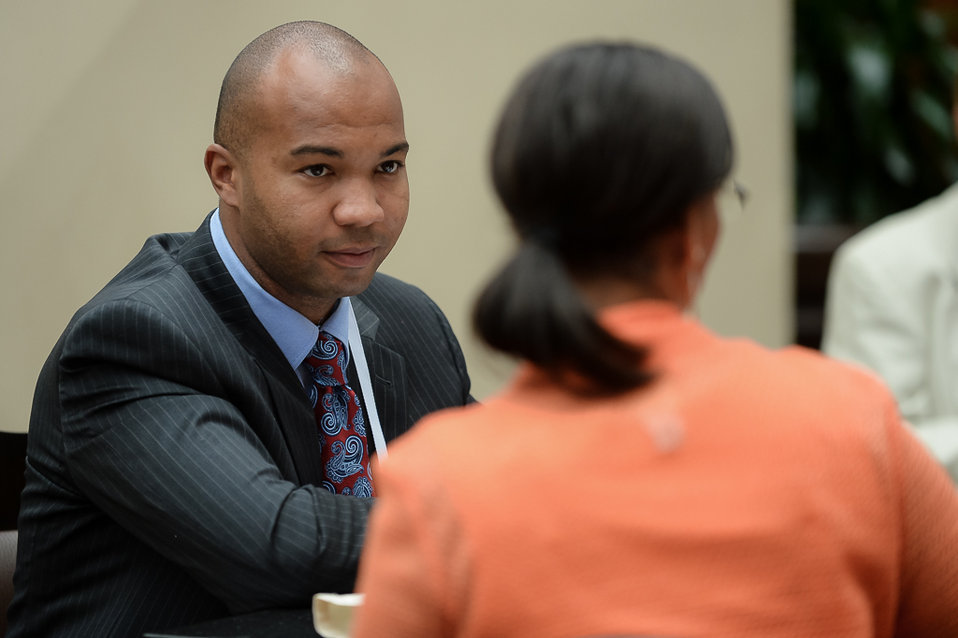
OSDBU Conf 12